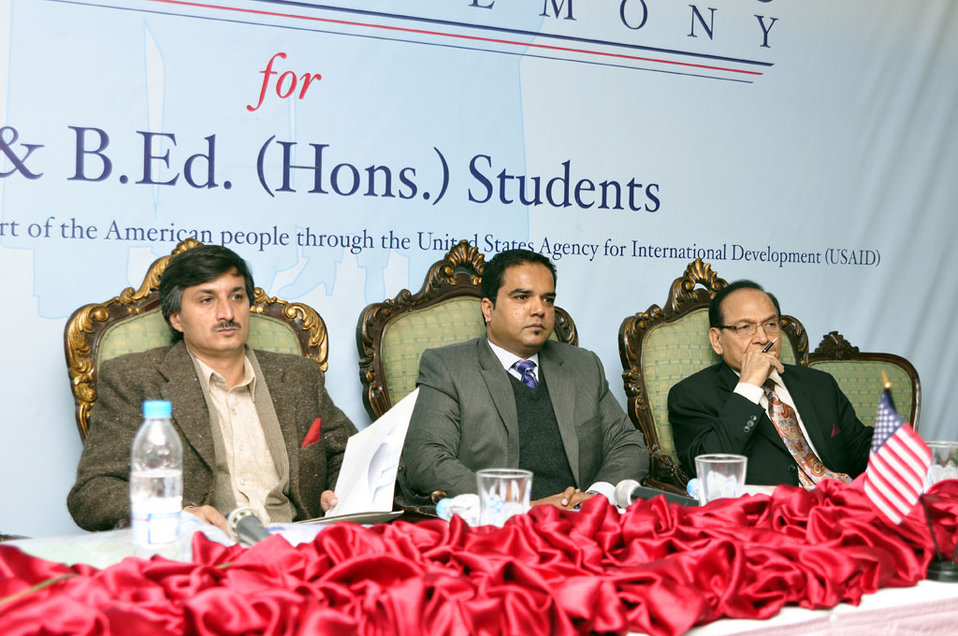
002: Peshawar, 27 Dec., 2011: USAID awarded scholarships to 44 Teacher Students from KP through its Pre-Service Teacher Education Program (Pre-STEP).

USAID awarded scholarships to 44 Teacher Students from KP through its Pre-Service Teacher Education Program (Pre-STEP). L to R: Mr. Sardar Hussain Babak, Provincial Minister for Elementary & Secondary Education, Government of Khyber Pakhtunkwa; Mr. Muhammad Tariq Khan, Senior Education Advisor, U.S. Agency for International Development (USAID); and Dr. Mahmoodul Hassan Butt, Chief of Party, USAID Pre-STEP.